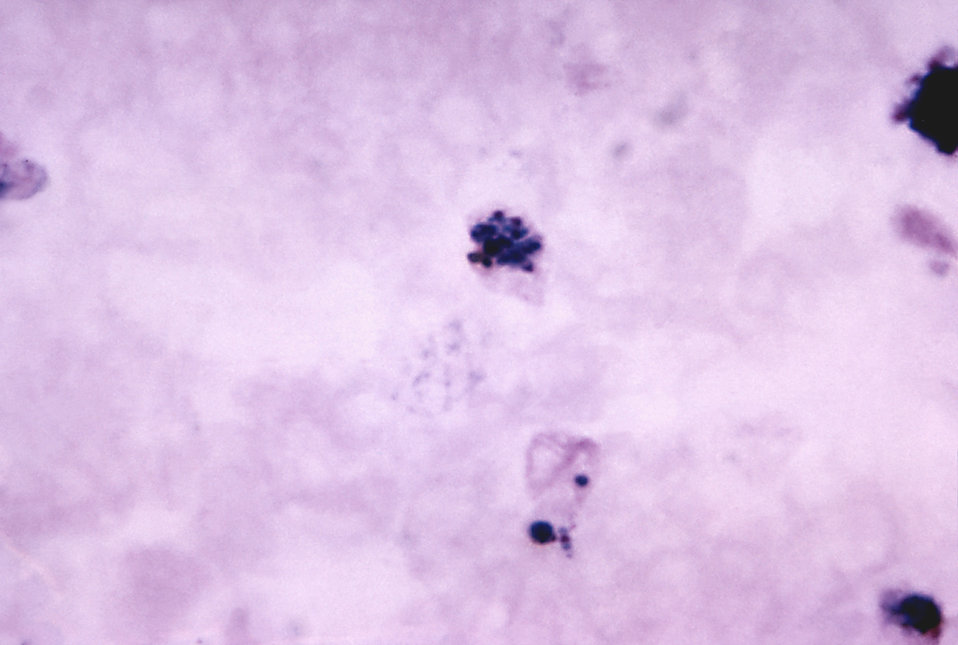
This thick film micrograph depicts a mature Plasmodium vivax schizont, and a growing trophozoite.